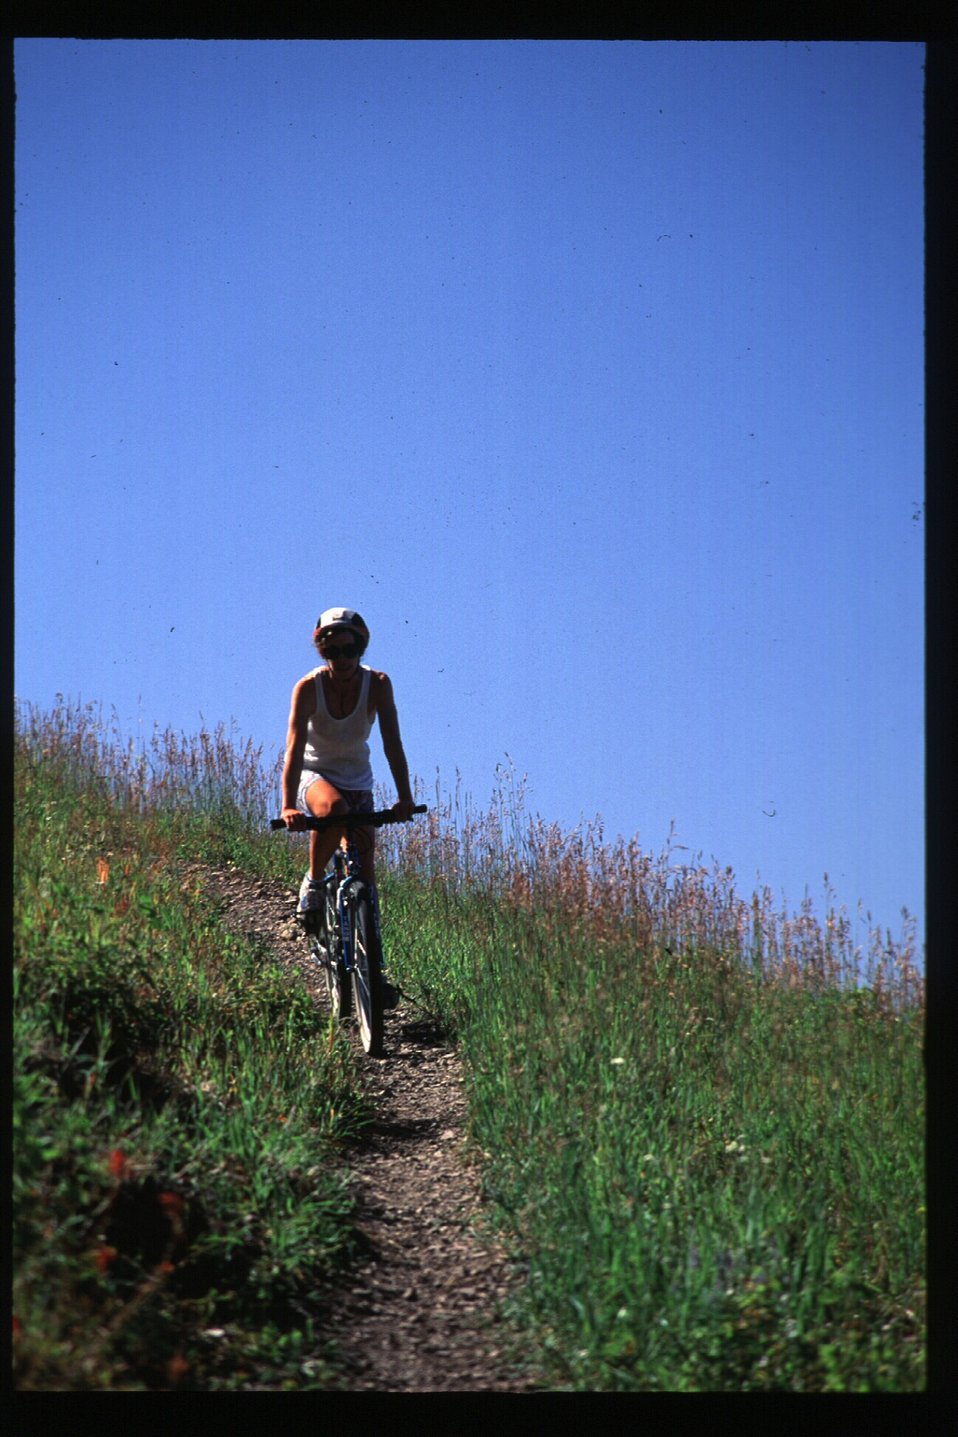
Recreation Scenic Biker Shoshone Field Office USRD Upper Snake River District